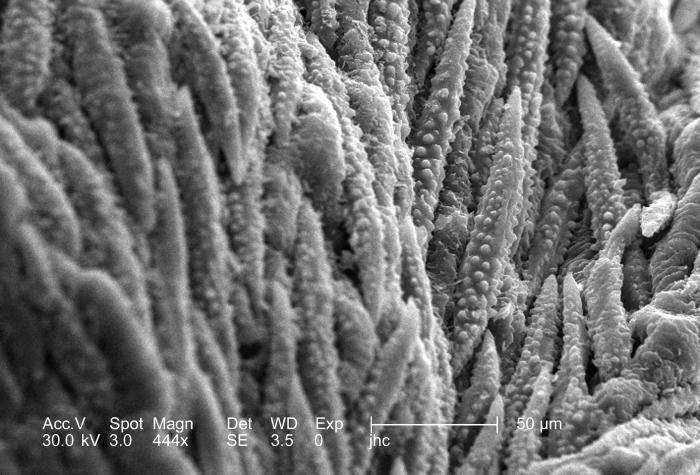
Under a moderately high magnification of 444x, this scanning electron micrograph (SEM) revealed some of the morphologic ultrastructural surface details of one of the very small flower buds clustered in the center of a white dogwood flower, Cornus florida. Due to the extremely small size of the centrally located clustered flowers, the larger colored "bracts" which are actually modified leaves that protect the flowers themselves, are also mistaken for flower petals.